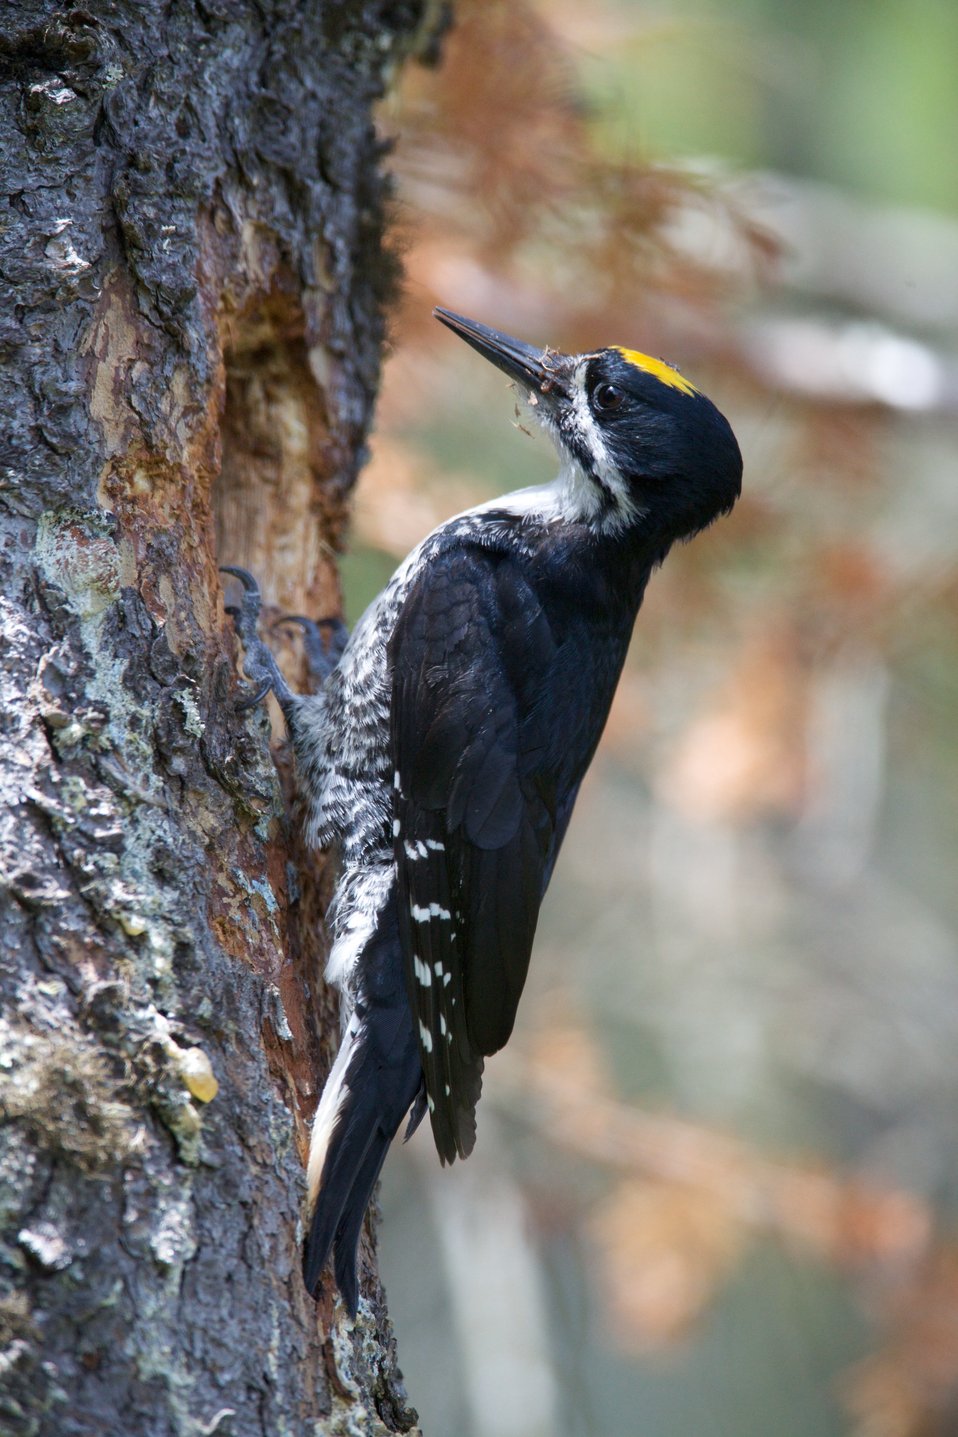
Black Backed Woodpecker

Nulhegan Basin Division, Silvio O. Conte National Wildlife Refuge.